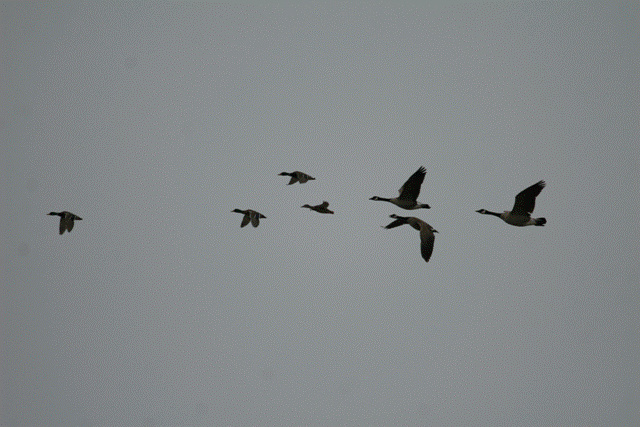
Ducks and Geese in Flight